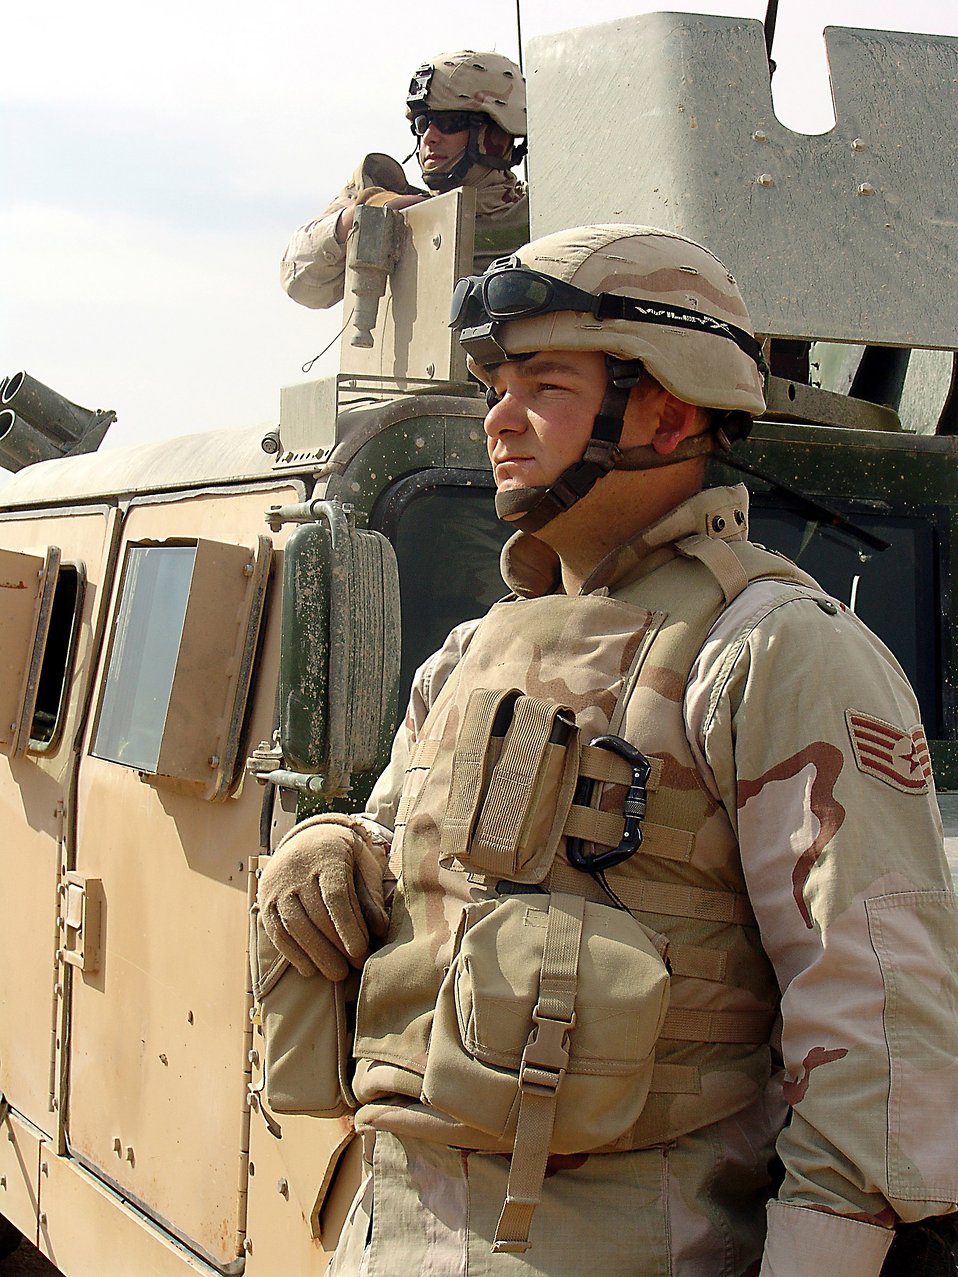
Airmen outside the wire

CAMP BUCCA, Iraq (AFPN) -- Staff Sgt. Jay Westerterd and Airman 1st Class Christopher Miranda provide security while squadron members conduct security operations. More than 750 Airmen are deployed here providing security for convoys and the base. Sergeant Westerterd and Airman Miranda are with the 586th Expeditionary Security Forces Squadron.